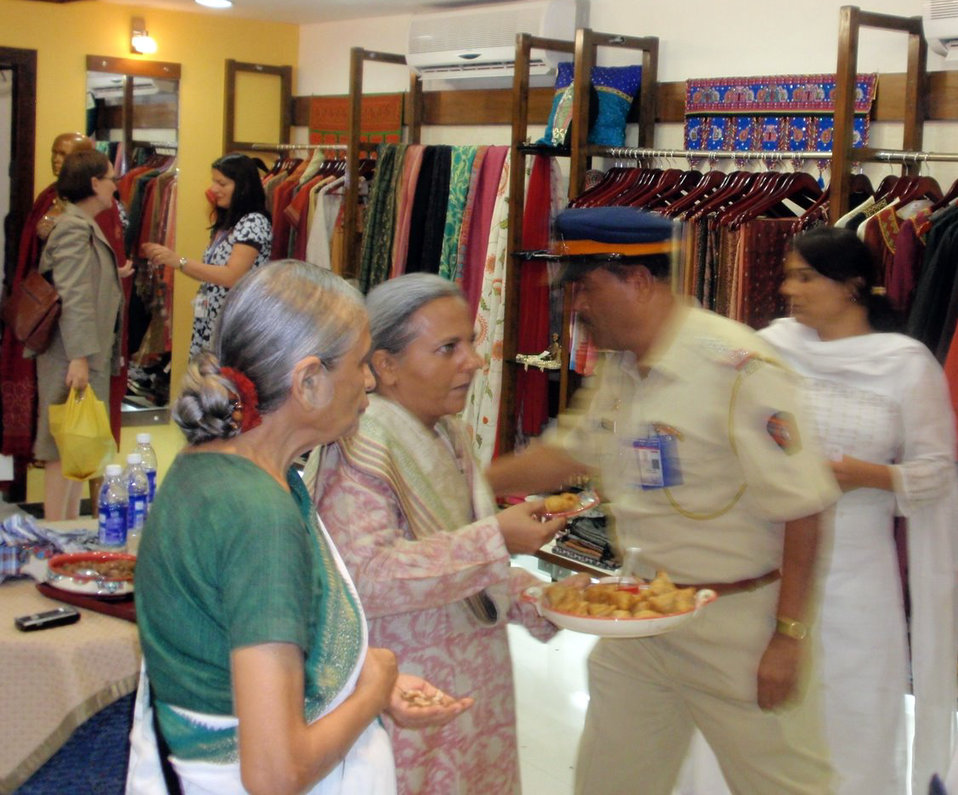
Behind the Scenes: SEWA Hansiba Store

Products at the SEWA (Self Employed Women's Association) store where U.S. Secretary of State toured while visiting Mumbai, India July 18, 2009.